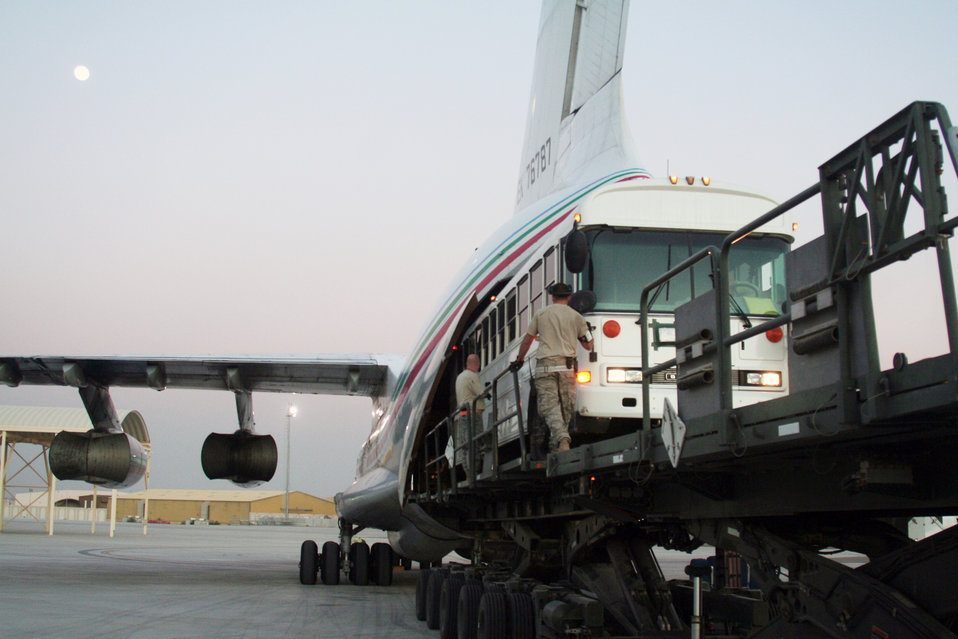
Aerial porters load American buses on Russian-made transport bound for Afghanistan

Air transportation Airmen load a 44-passenger bus weighing more than 20,000 pounds onto a Russian-built IL-76 transport plane during operations Dec. 30, 2009, at an air base in Southwest Asia. The bus was one of two that were loaded on the IL-76 for transport to Afghanistan. The Airmen are assigned to the 380th Expeditionary Logistics Readiness Squadron.